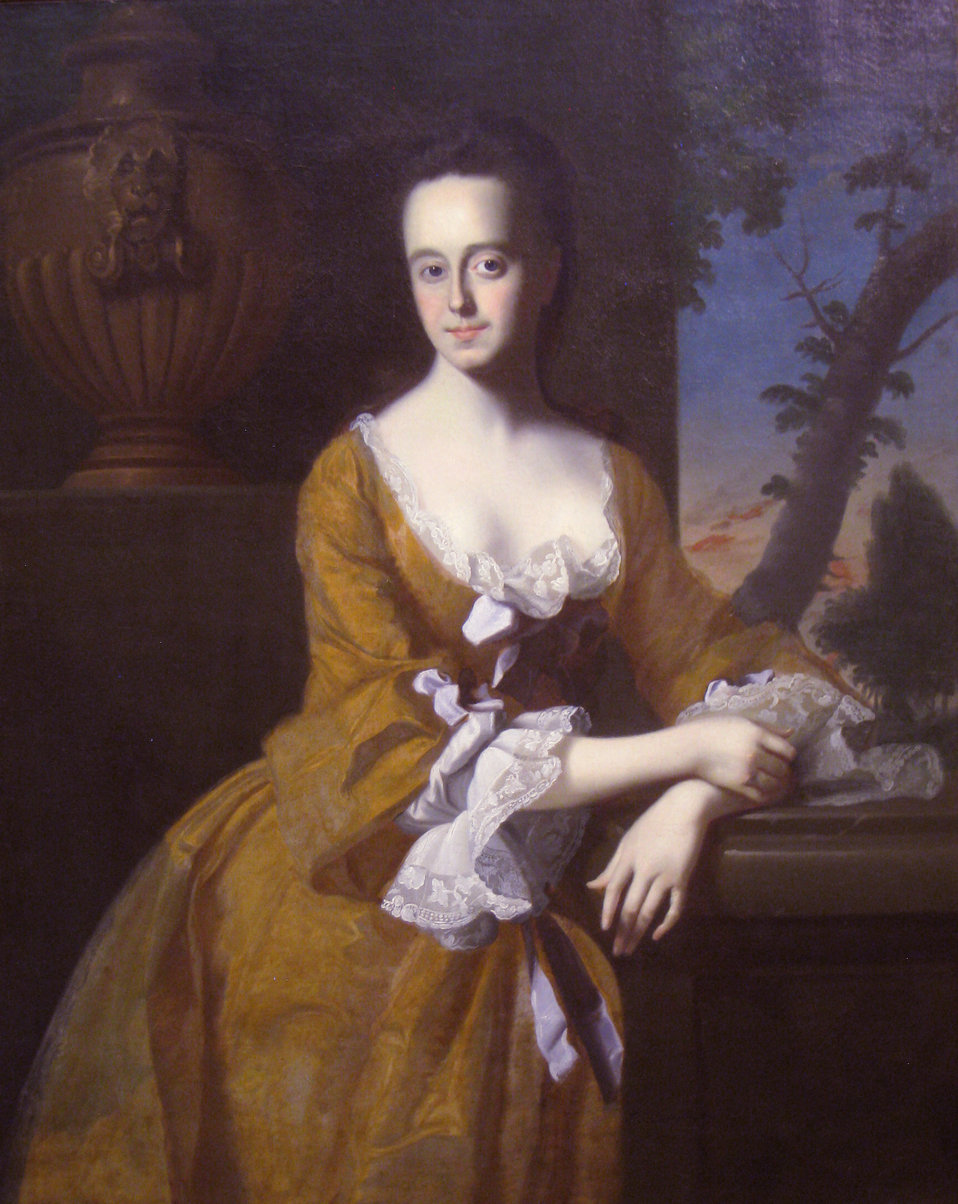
Lucretia Chandler, Mrs. John Murray, 1763, by John Singleton Copley (1738-1815) - Worcester Art Museum - IMG 7698